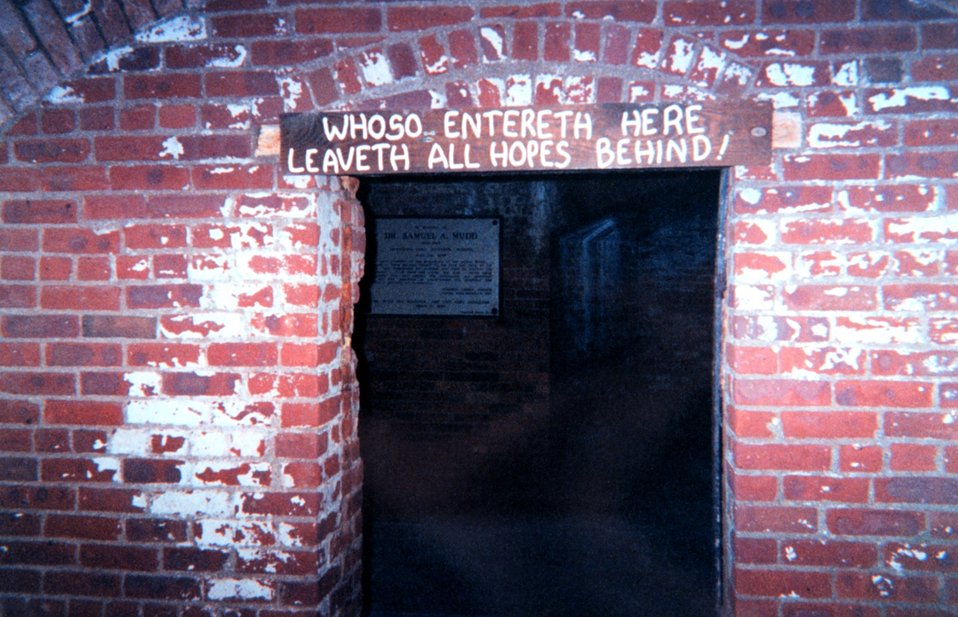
Sign over the cell that housed Dr. Samuel Mudd, controversial doctor who treated John Wilkes Booth following Abraham Lincoln's assassination. Mudd was convicted of helping Booth and served three years of his sentence at Fort Jefferson. He helped treat many Union soldiers during a yellow fever epidemic and was subsequently paroled.